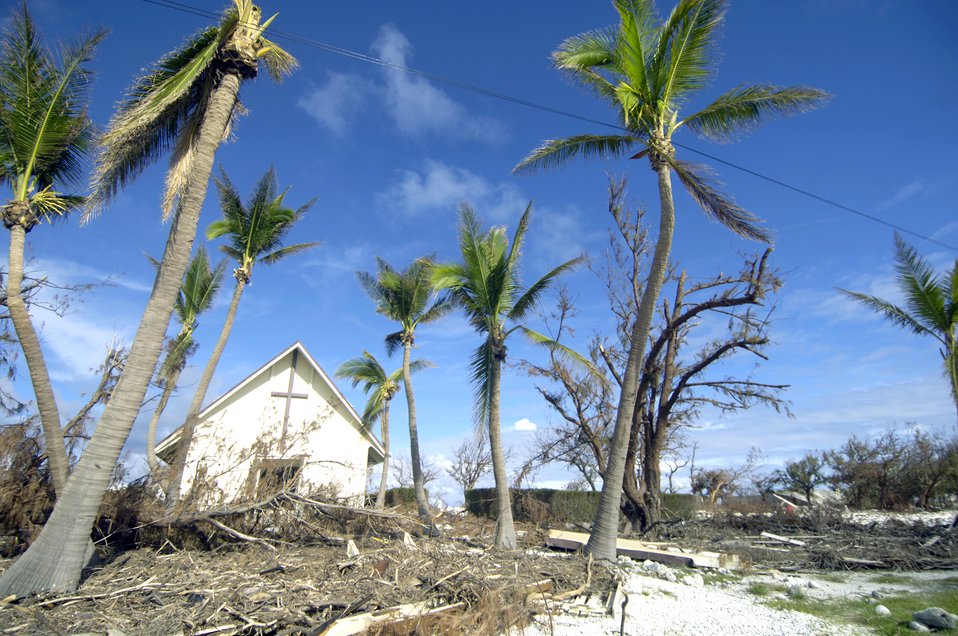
Teams fly to Wake Island to assess damage

A damaged church, dead trees and debris on Wake Island are signs of the destruction left by Super Typhoon Ioke when it hit the island Aug. 31. A C-17 Globemaster III from Hickam Air Force Base, Hawaii, brought a 53-person team to the island Sept. 12 to assess damage left by the typhoon.